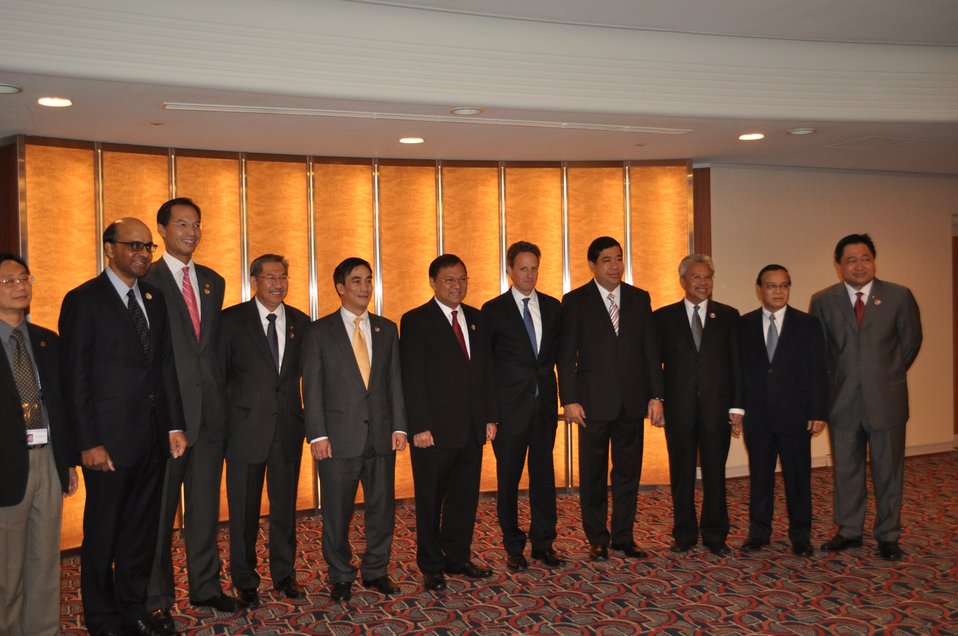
Secretary Geithner's trip to Japan

Secretary Geithner with finance ministers of ASEAN, an important regional forum for financial and economic cooperation, in Kyoto, Japan.